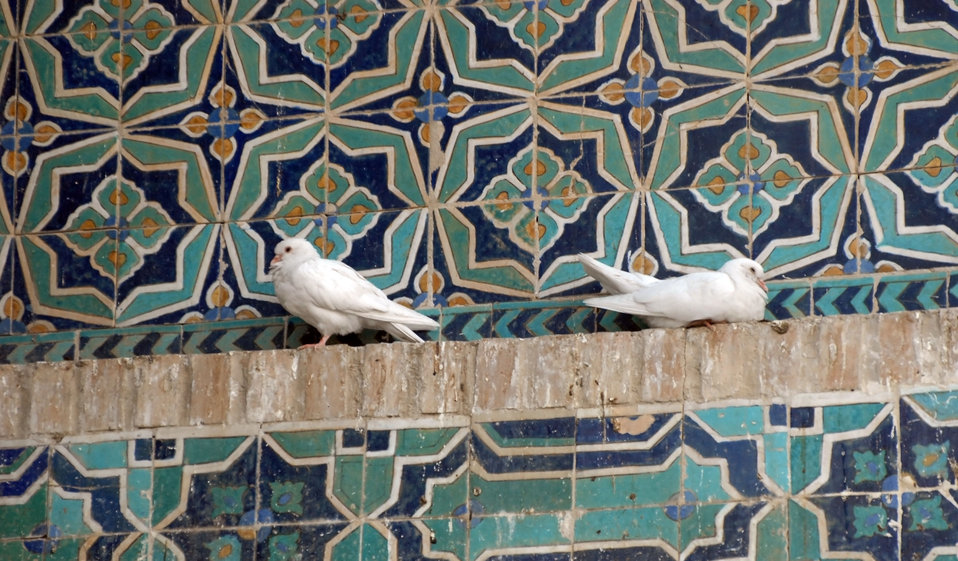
'On the Road' in Balkh Province